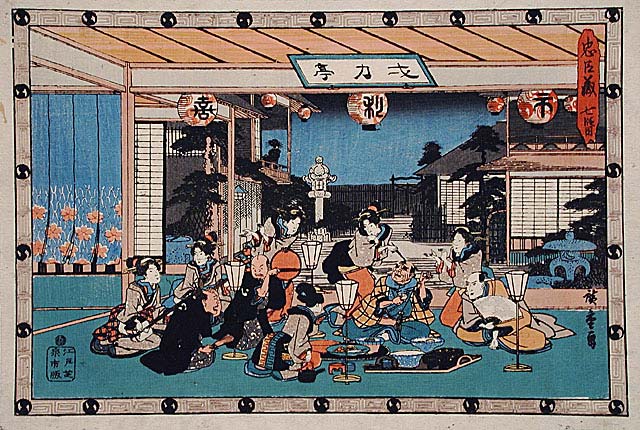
Act VII